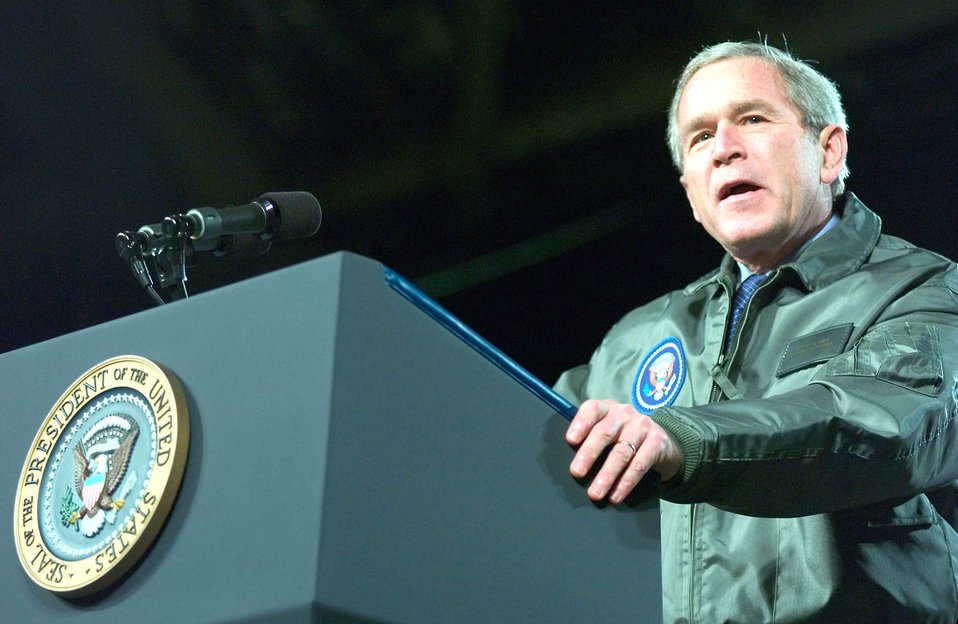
President thanks troops at Elmendorf

ELMENDORF AIR FORCE BASE, Alaska (AFPN) -- President George W. Bush addresses more than 4,500 military and civilian members during a stop here during his trip to China for talks with the regions' economic and strategic leaders. The president spoke for nearly 45 minutes during the Nov. 14 stop.